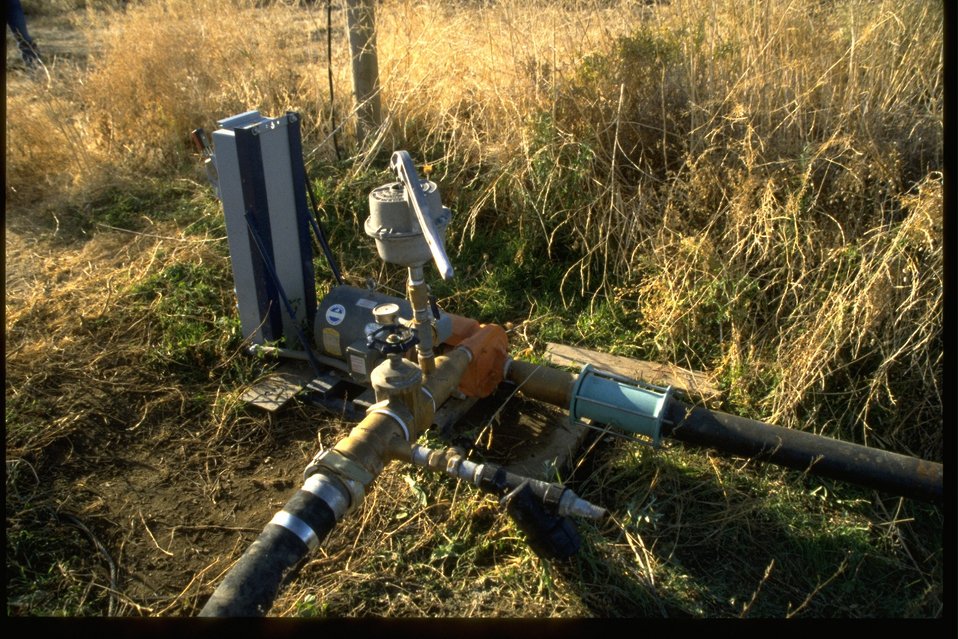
Electronic pump system for wildlife and cottonwood fields in the John Day River.